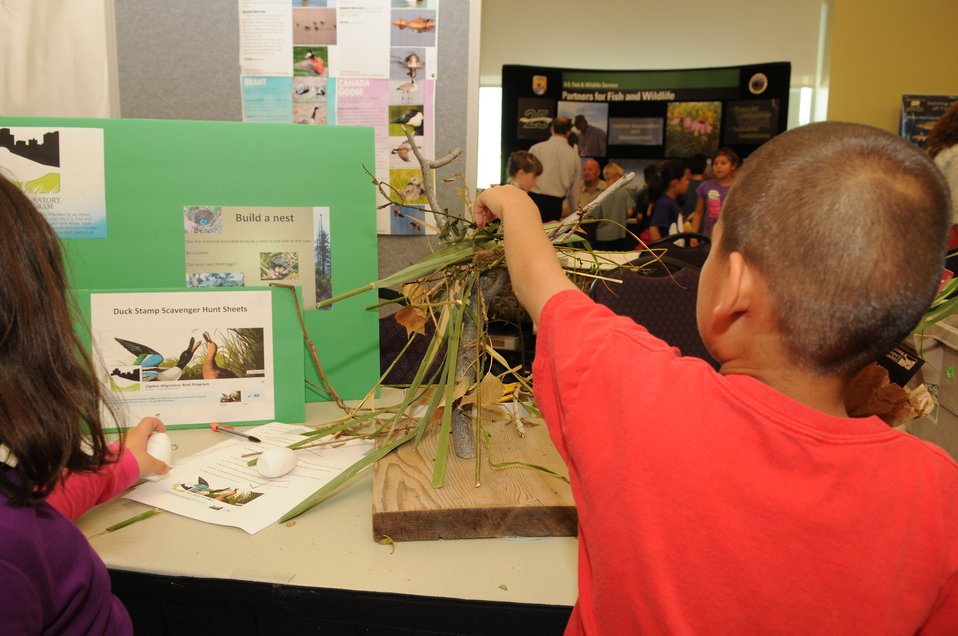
Youth Outreach

The U.S. Fish & Wildlife Service sponsored the 2012 Federal Duck Stamp Art Contest September 28 and 29 in Ogden, Utah, at Weber State University. A panel of five judges was responsible for choosing the art work used to design the 2013-2014 Migratory Bird Hunting and Conservation Stamp.